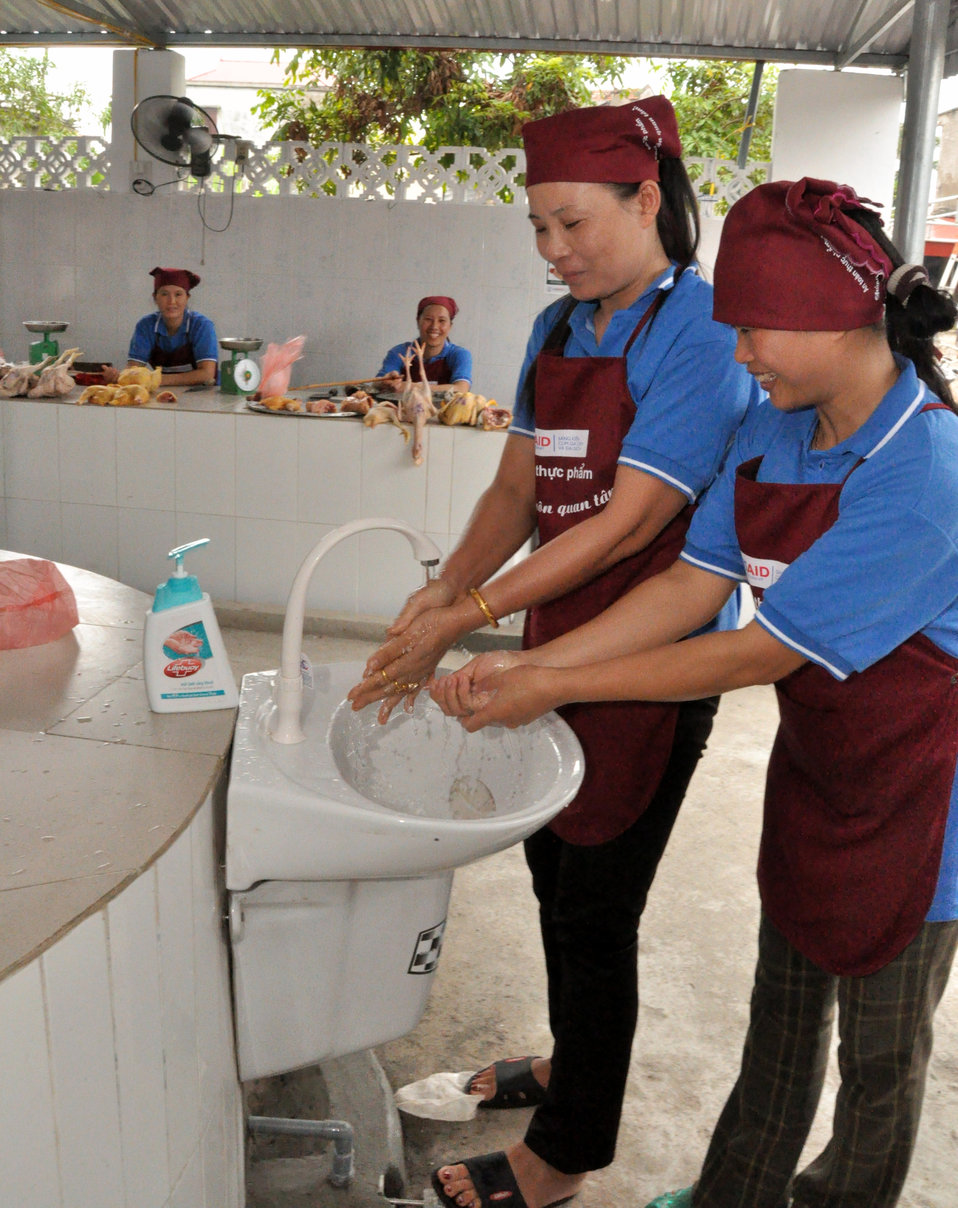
Handover Ceremony Hoa Mac Market Ha Nam

October 26, 2012